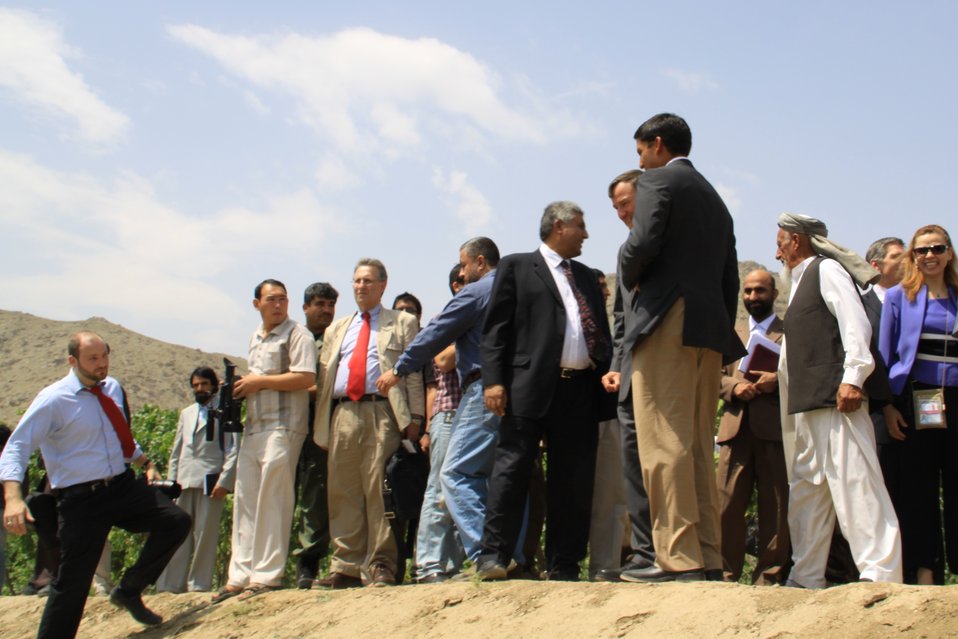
Badam Bagh Farm